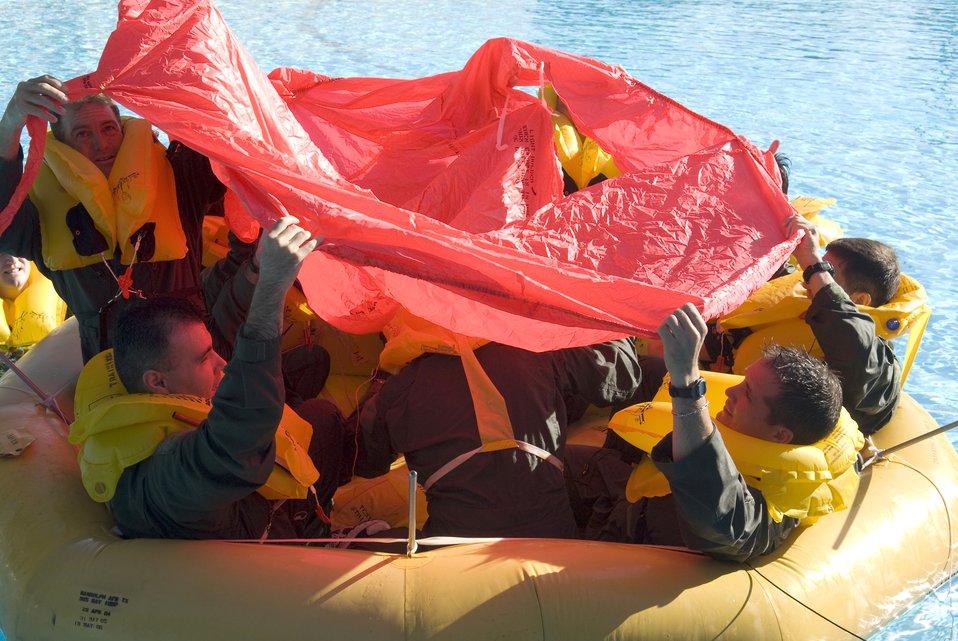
Water survival skills

T-1A Jayhawk instructor pilots attach the roof on their nine-man raft during water survival refresher training Aug. 6, 2010, at Randolph Air Force Base, Texas.